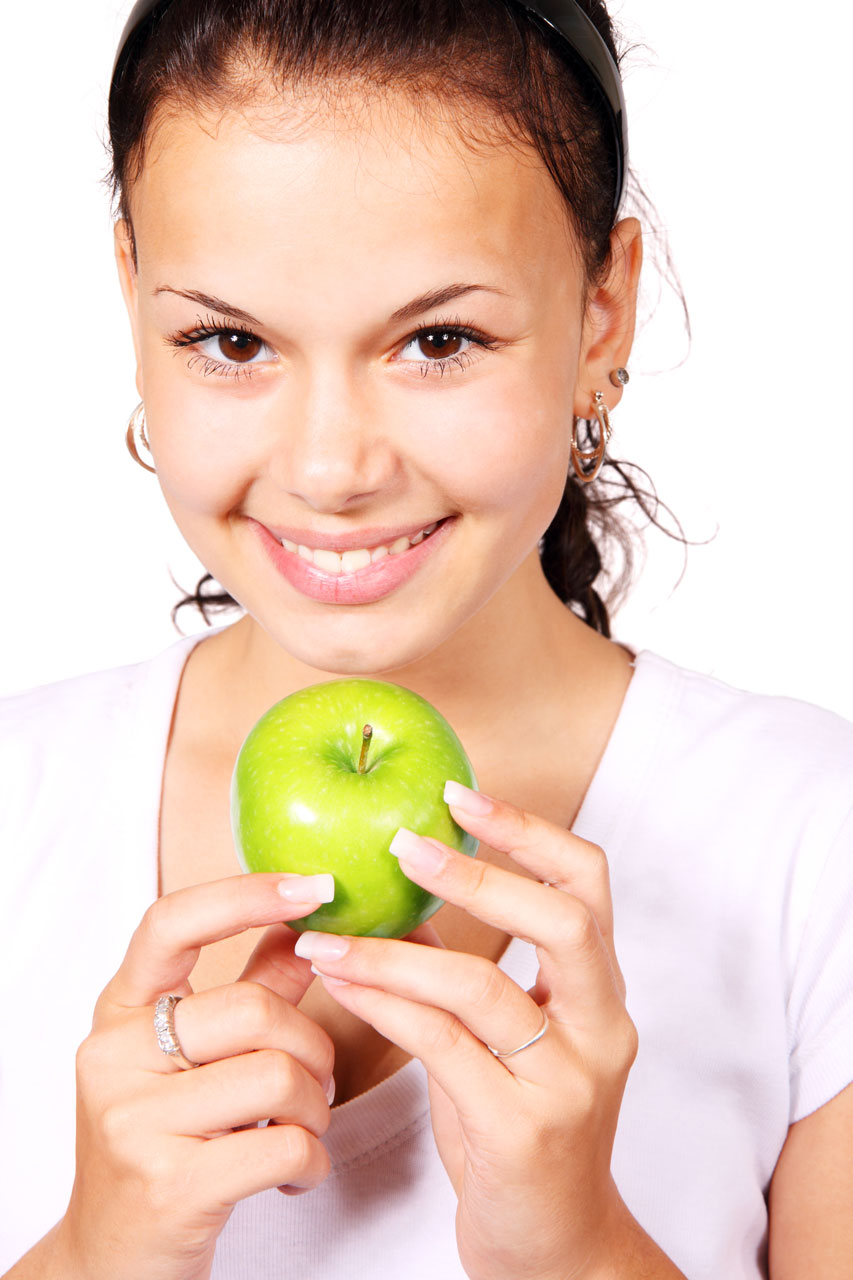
Young woman with green apple

Young woman holding green apple.